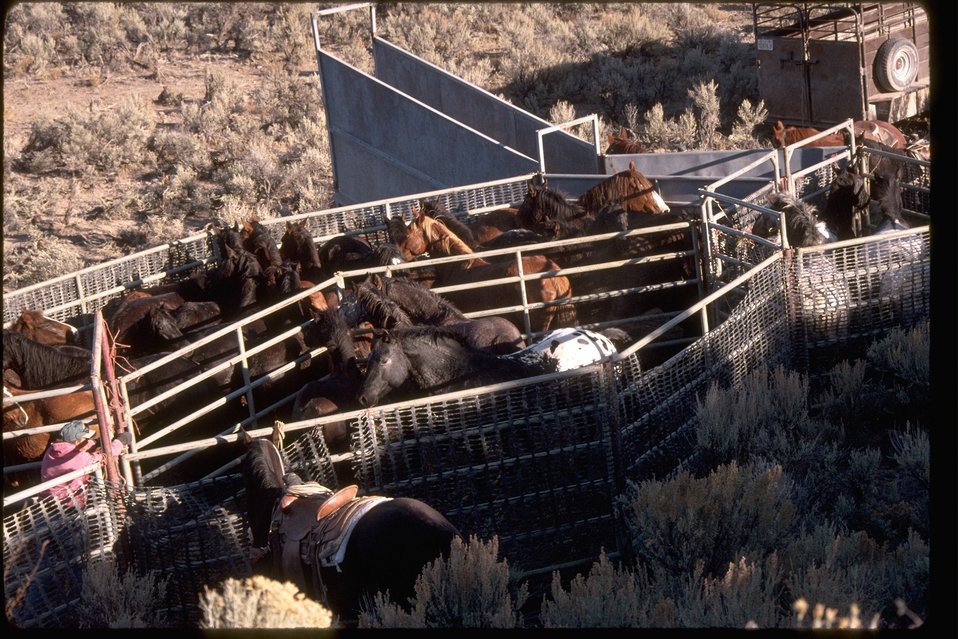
Wild horses in trap at the Warm Springs Herd Management Area in the Burns District, Oregon.